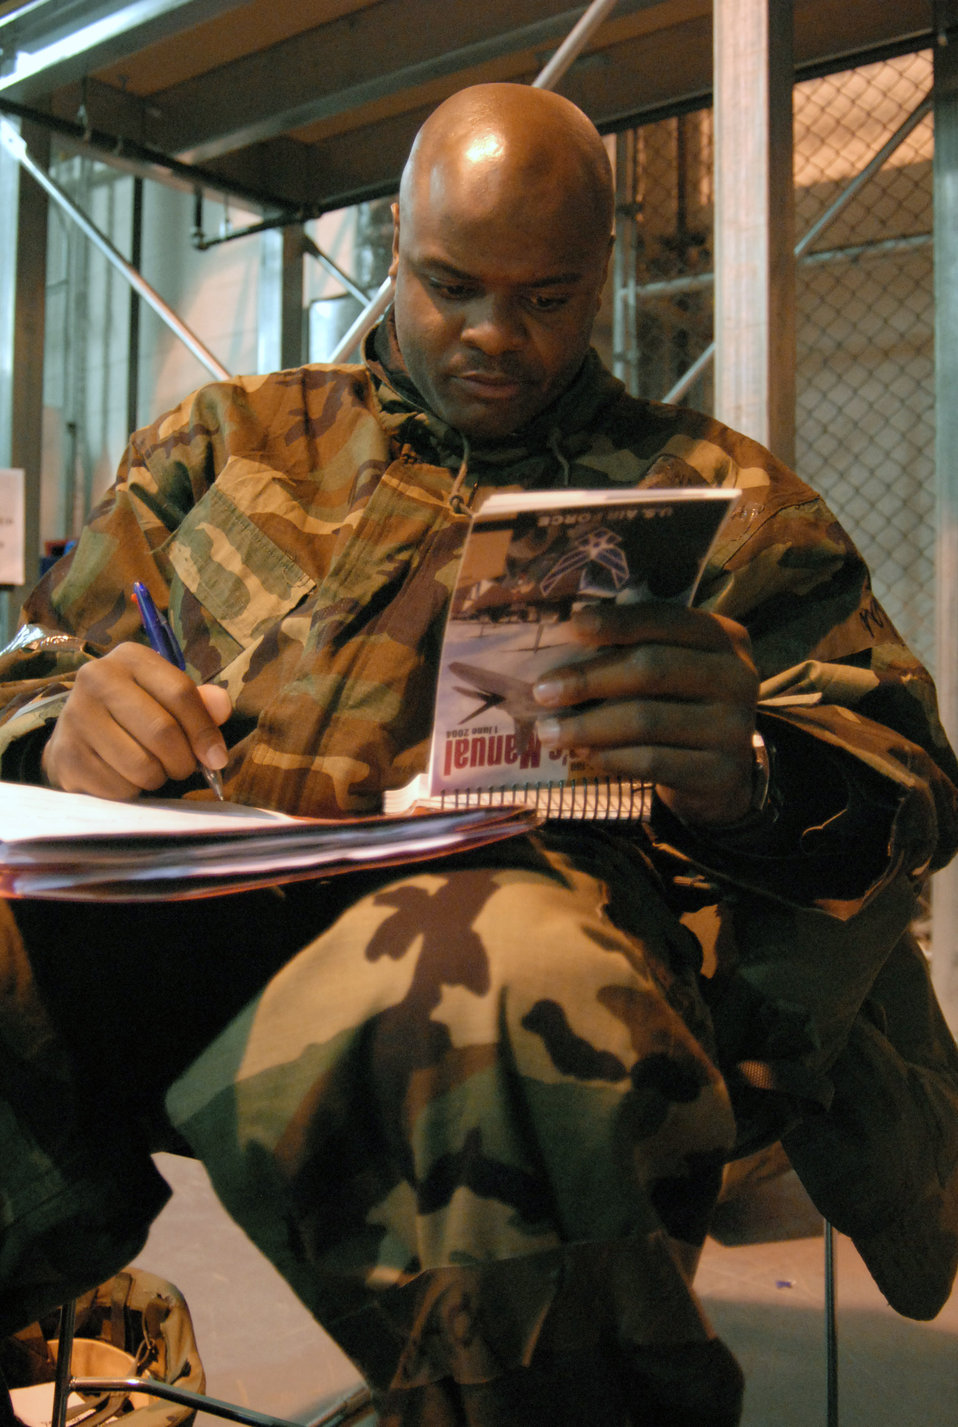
Edwards NCO uses training to help save accident victims

Tech. Sgt. Rondale Alexander reviews his Air Force Manual 10-100 during a recent Targeted Readiness Inspection at Edwards Air Force Base, Calif. He is the NCO in charge of Air Force Flight Test Center command section.